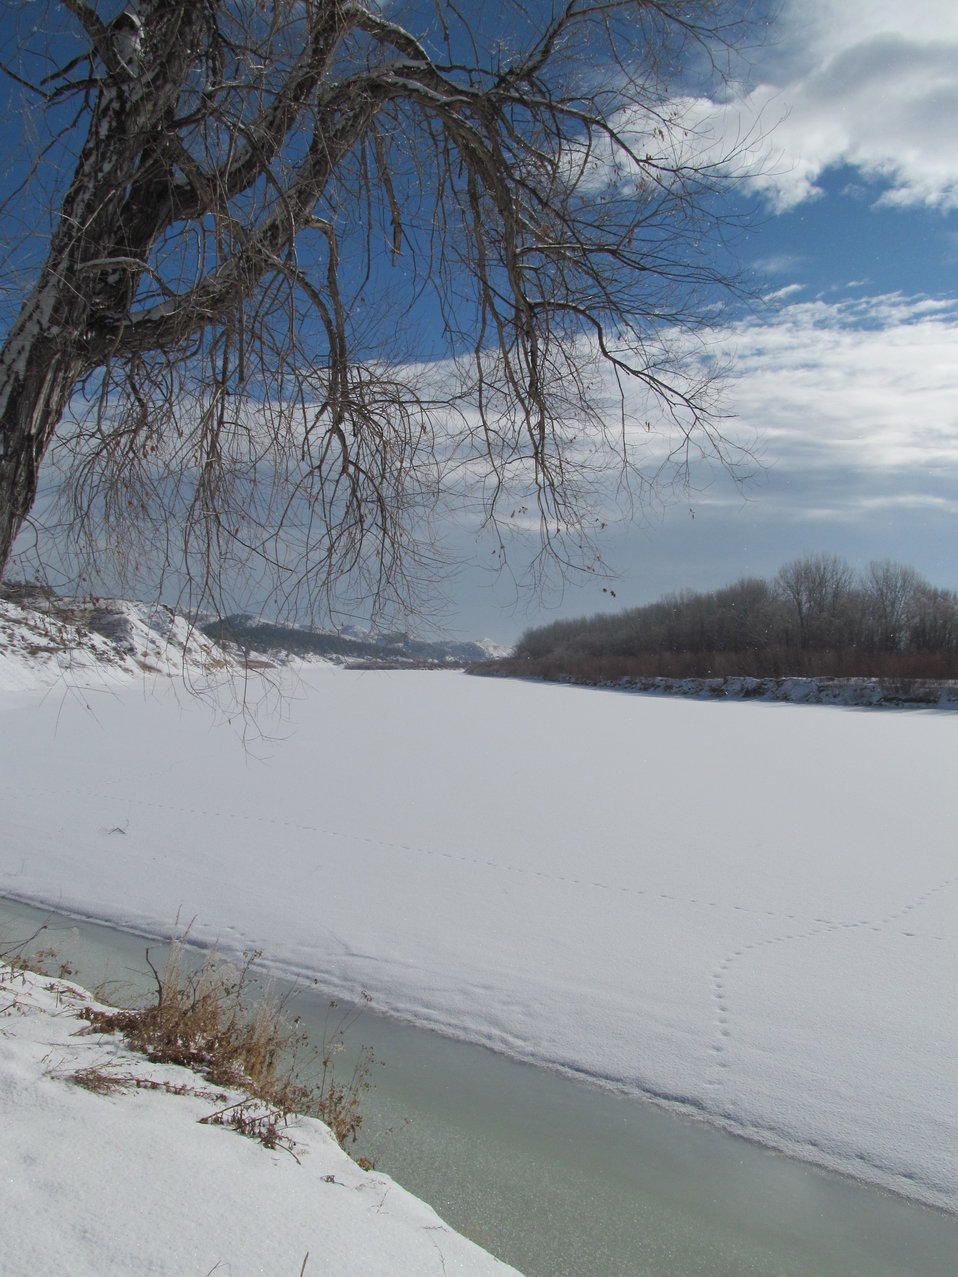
Missouri River

The frozen Missouri River on the west end of Charles M. Russell NWR.